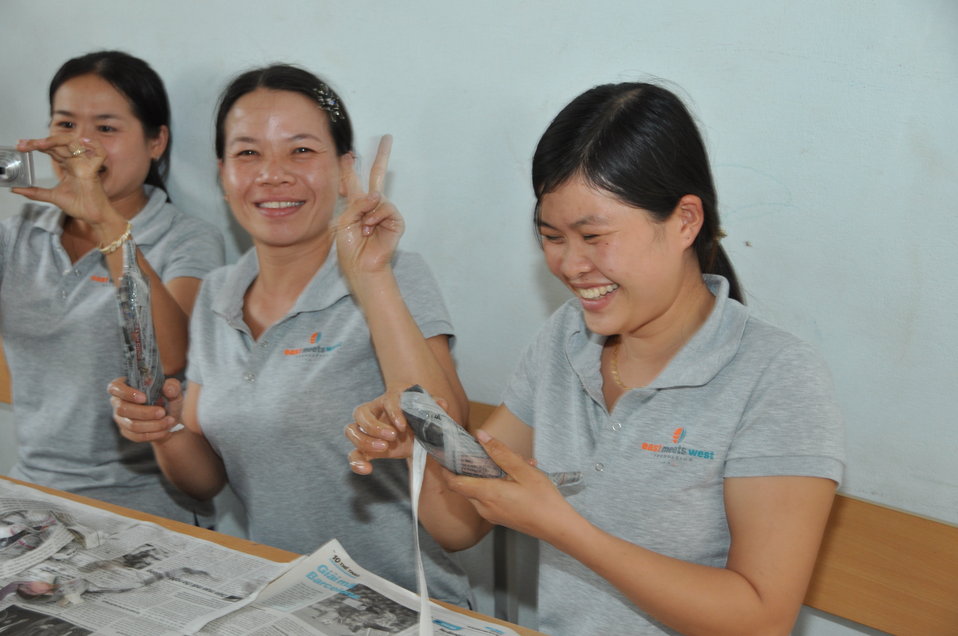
USAID and EMW support teacher training for young ethnic minority children in Kon Tum, Vietnam